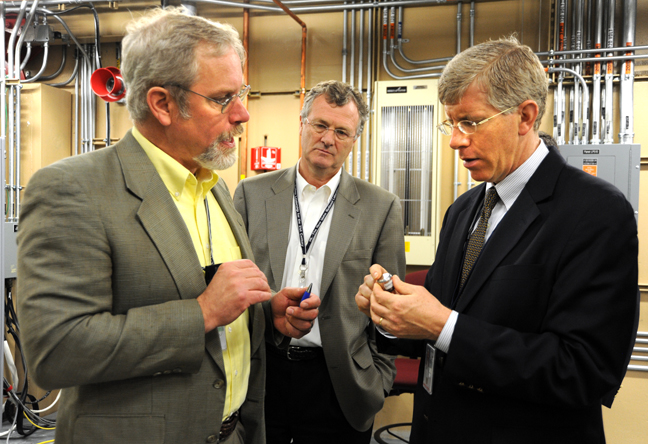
P-6250-17 72dpi

INL's Steve Johnson shows the Deputy Secretary a model of a plutonium heat source that is used to generate power and heat for remote space missions, while Deputy INL Director Dave Hill looks on.